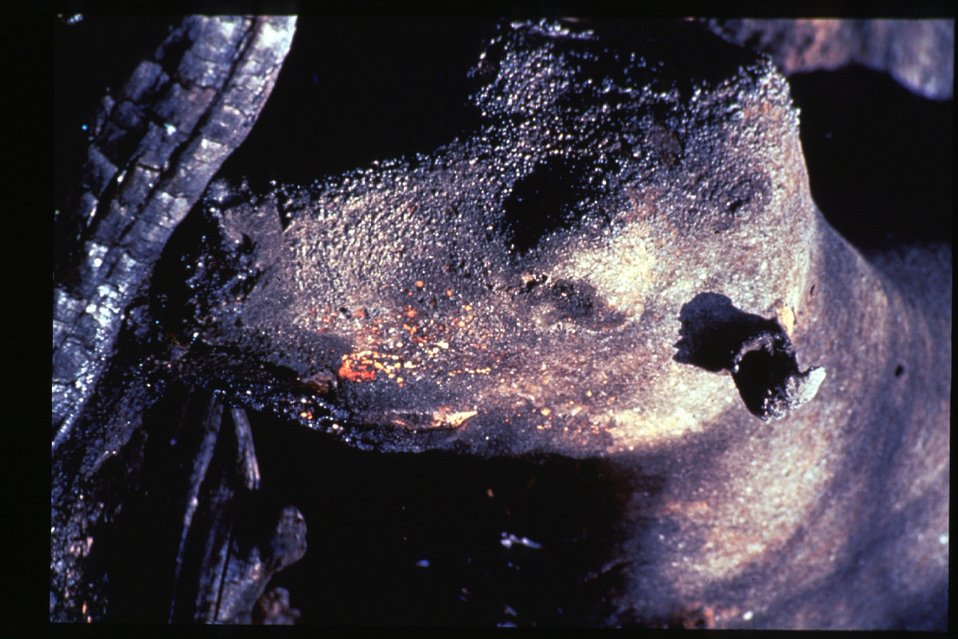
Boise Foothills Fire Danskin Mountains and South Fork of Boise River Burnt deer Four River Field Office LSRD Lower Snake River District